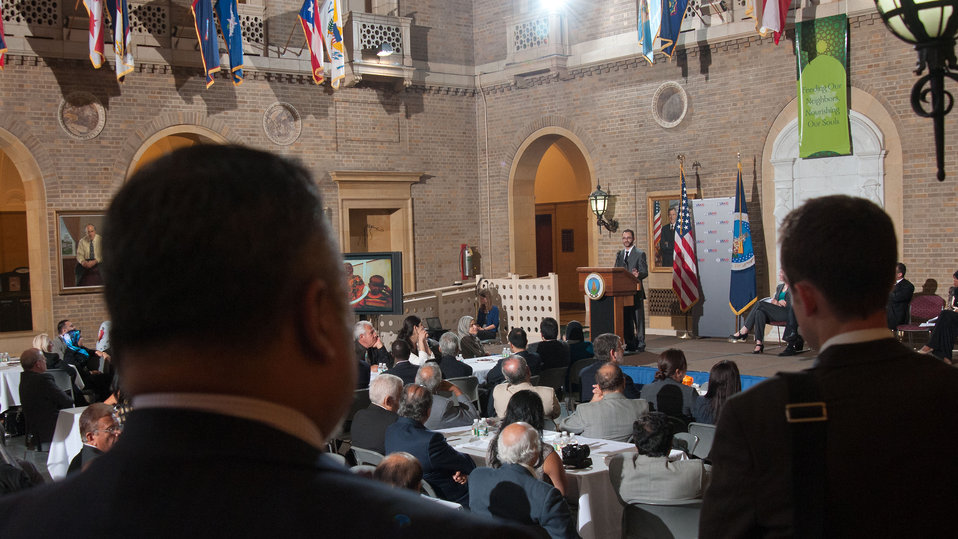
It is 'standing room only' when Islamic Relief USA Creative Director and Photographer Ridwan Adhami talks about the concept and preconceived notions he had before the start of his documentary project and the new perspectives into the human condition through the individuals he met and photographed; during the Iftar event, co-sponsored by the Iftar celebration, co-sponsored by the U.S. Department of Agriculture, U.S. Agency for International Development (USAID) and Islamic Relief USA, on Tuesday, August 7, 2012, in the USDA Whitten Building, in Washington, D.C. Ramadan is the month of fasting, intensive prayer, sacrifice and worship for Muslims around the world. Throughout this month, Muslims fast during the day, abstaining from consuming food from dawn to dusk and using this time to purify spiritually. Fasting reminds Muslims of the poverty and hunger suffered by many in the United States and worldwide. It is a connection with those who are hungry not through devotion, but through the many global factors that lead to hunger and famine. Iftar is the meal at which Muslims break their fast at sunset, usually by eating dates, according to the Prophetic tradition.